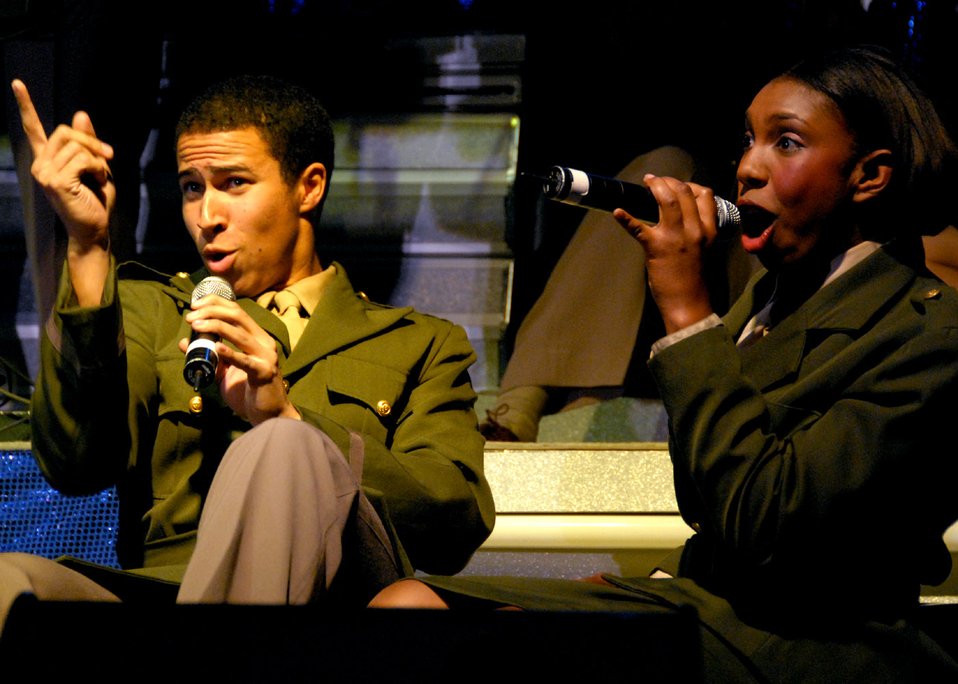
Tops In Blue performs at Osan

Airman 1st Class Jesse Cox (left) and Senior Airman Chonte Walker perform during their annual world tour celebrating